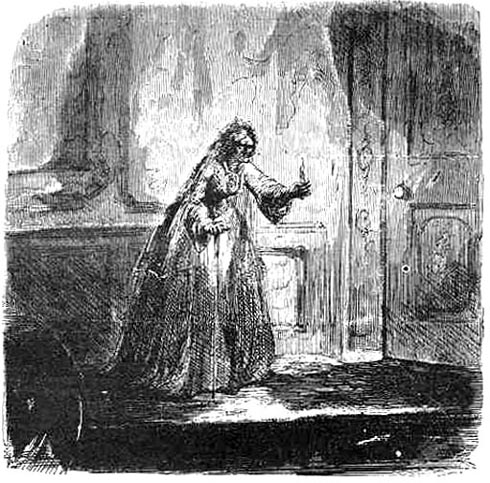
Miss Havisham carrying a bare candle in her hand, by John McLenan